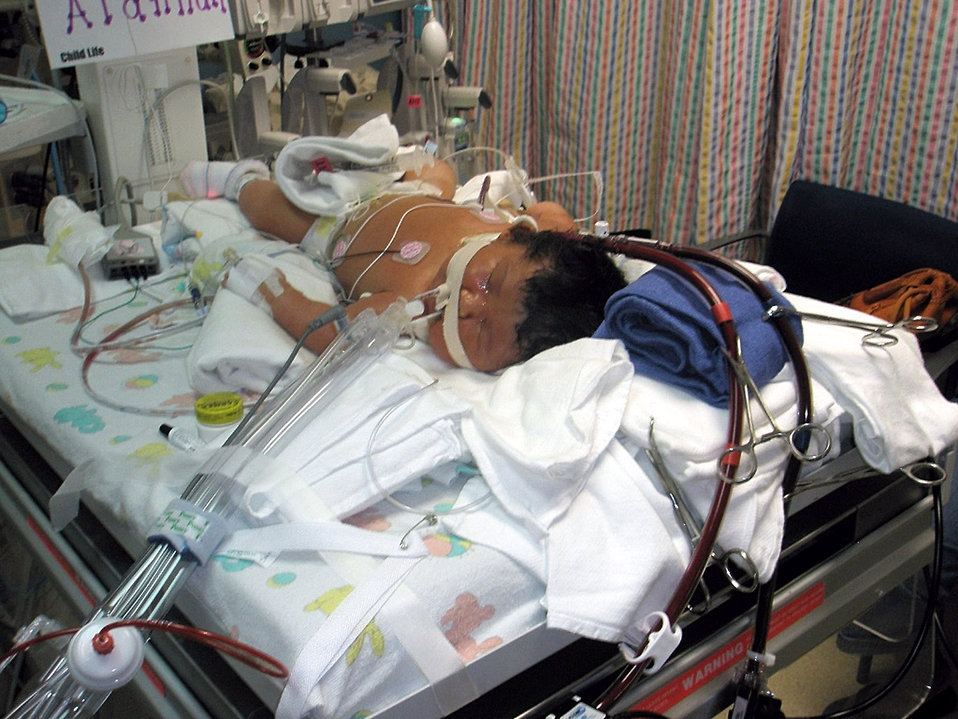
Wilford Hall Airmen aid Hurricane Ike evacuees

Alannah Miranda Garcia is on extracorporeal membrane oxygenation, a heart-lung bypass machine, in the Wilford Hall Medical Center neonatal intensive care unit Sept. 9 at Lackland Air Force Base, Texas. The baby was transported to Wilford Hall Medical Center by a critical care team Sept. 9 from the Driscoll Children's Hospital in Corpus Christi, Texas, in anticipation of Hurricane Ike hitting the Texas coastline. Robert Digeronimo)